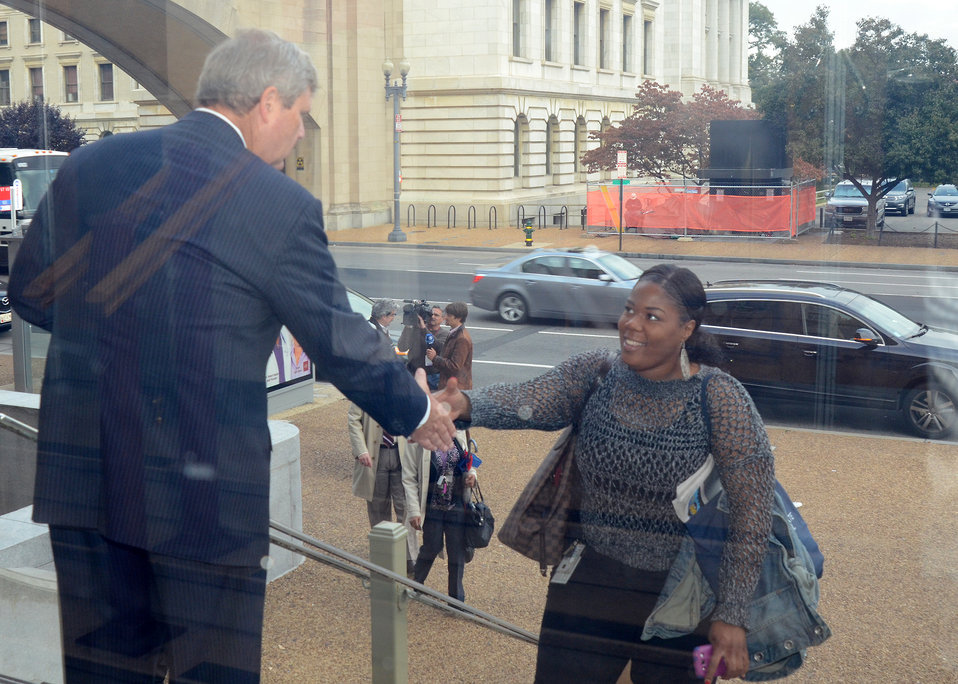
Agriculture Secretary Tom Vilsack welcomes employees back to work on the steps of the U.S. Department of Agriculture's South Building on Thursday, Oct. 18, 2013.